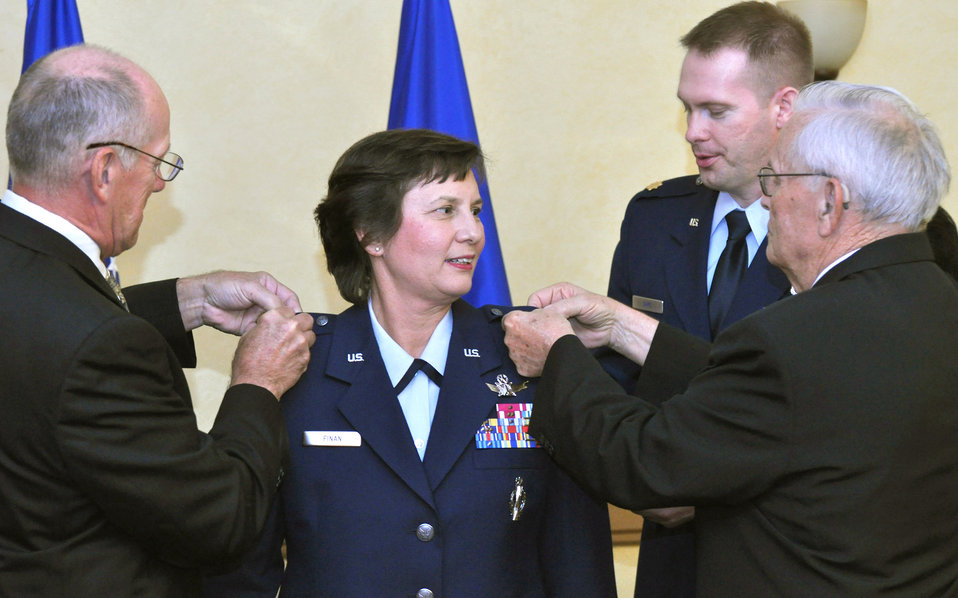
'Making rank'

Retired Col. Chuck Finan (left), husband of Brig. Gen. Sandra Finan, and Delmar Chase, the general's father, pin handmade brigadier general's stars on the general at her promotion ceremony June 15, 2010, at Barksdale Air Force Base, La. General Finan is the Air Force Global Strike Command Inspector General.